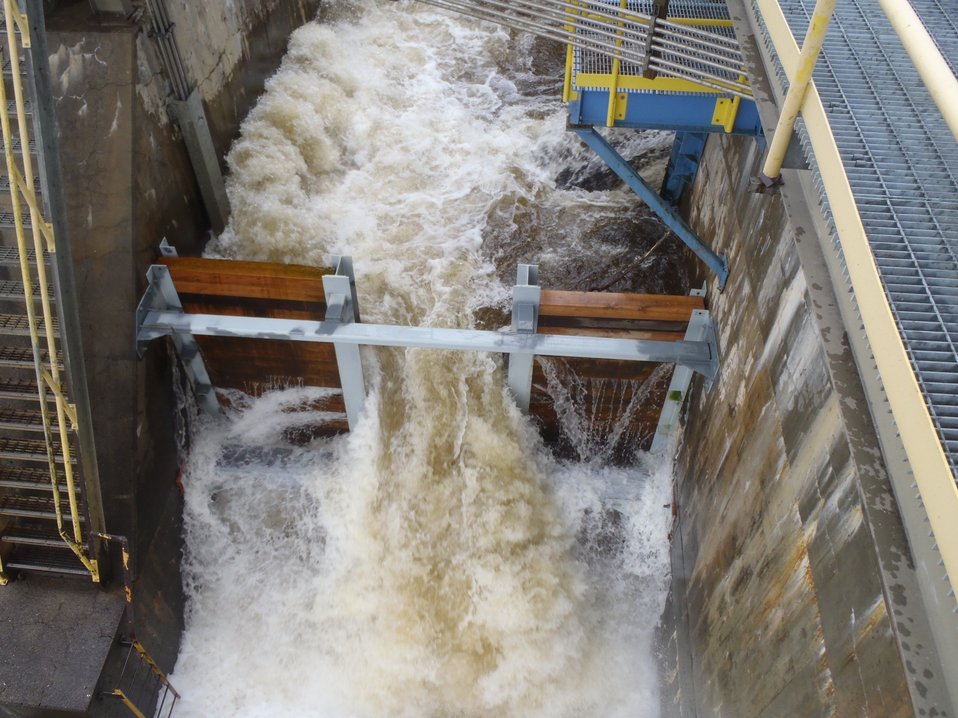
Fish passage